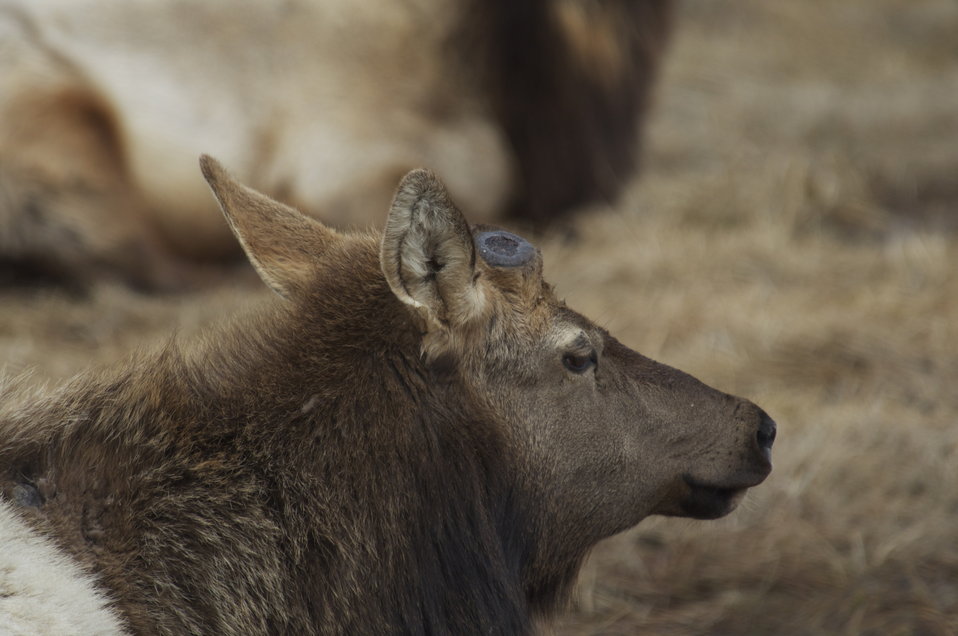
Gone Missing

Antlers grows from an attachment point on the skull called a pedicle, which can clearly be seen on this bull after his antlers have dropped for the season.

Credit: USFWS / Mike Nordell, seasonal naturalist